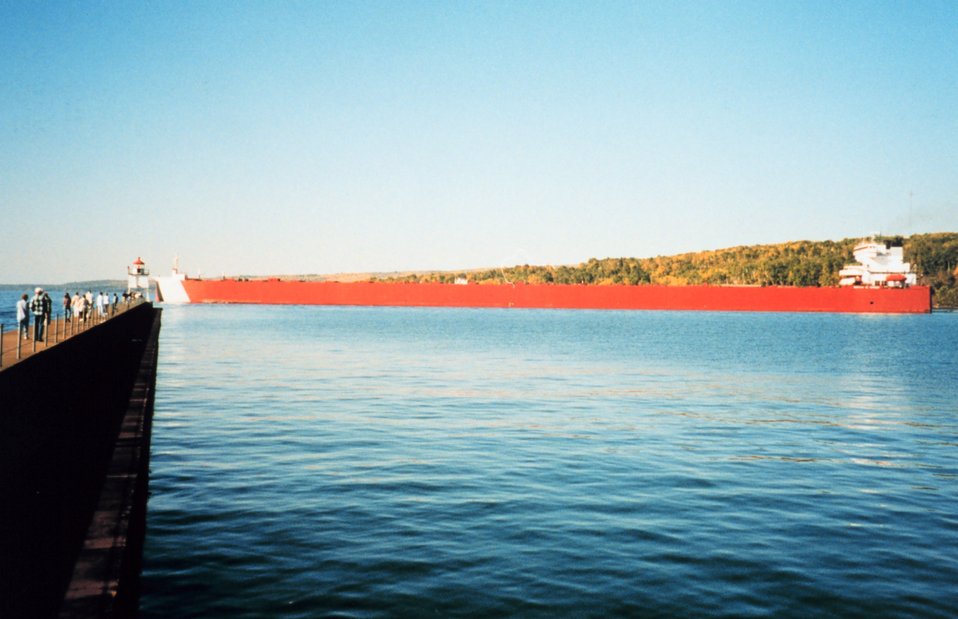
Iron ore carrier departing Two Harbors area on Lake Superior